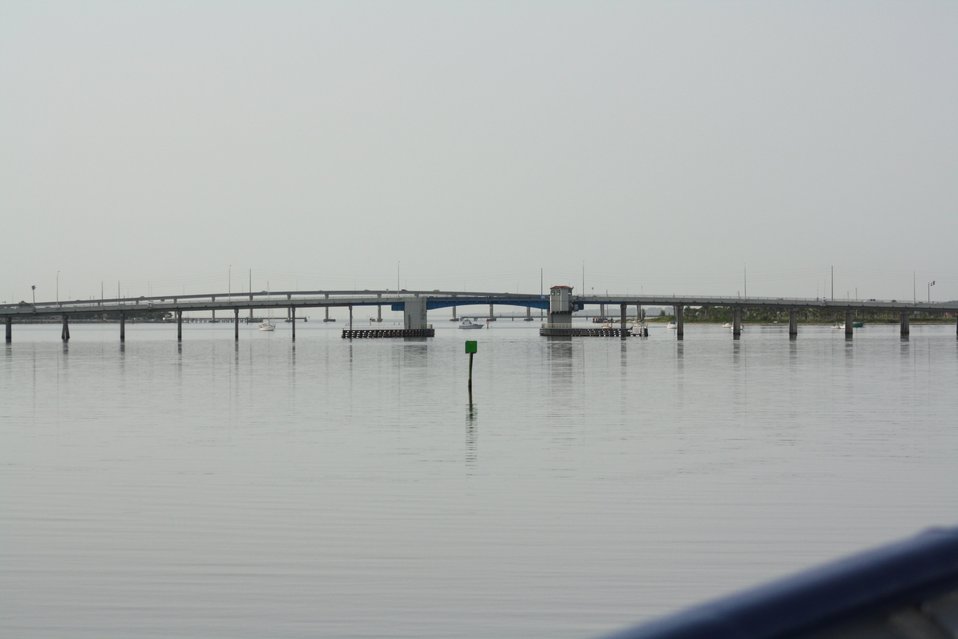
Approaching Florida A1A bridge at Fort Pierce from the north. The Seaway Drive bridge is the second bridge as seen from the north.